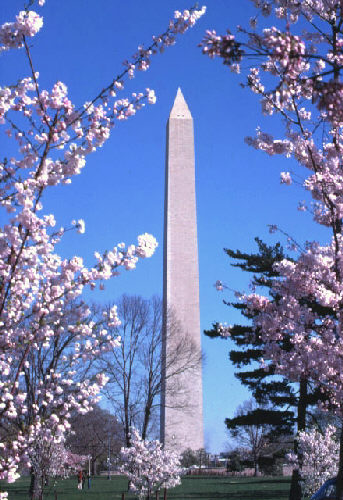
Washington Monument and cherry blossoms.